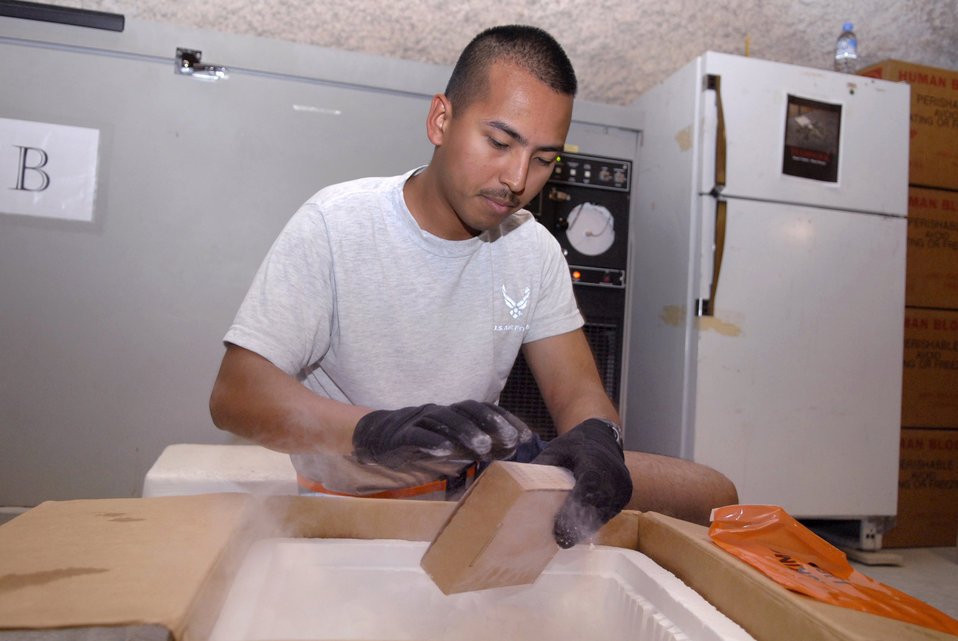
Blood Transshipment Center

Staff Sgt. Matthew Cruz removes frozen plasma May 9 from an incoming shipment to the 379th Expeditionary Medical Group Blood Transshipment Center at this air base in Southwest Asia so it can be inventoried and stored for later distribution throughout the U.S. Central Command area of responsibility. Sergeant Cruz volunteers at the BTC and is assigned to the 379th Expeditionary Civil Engineer Squadron.